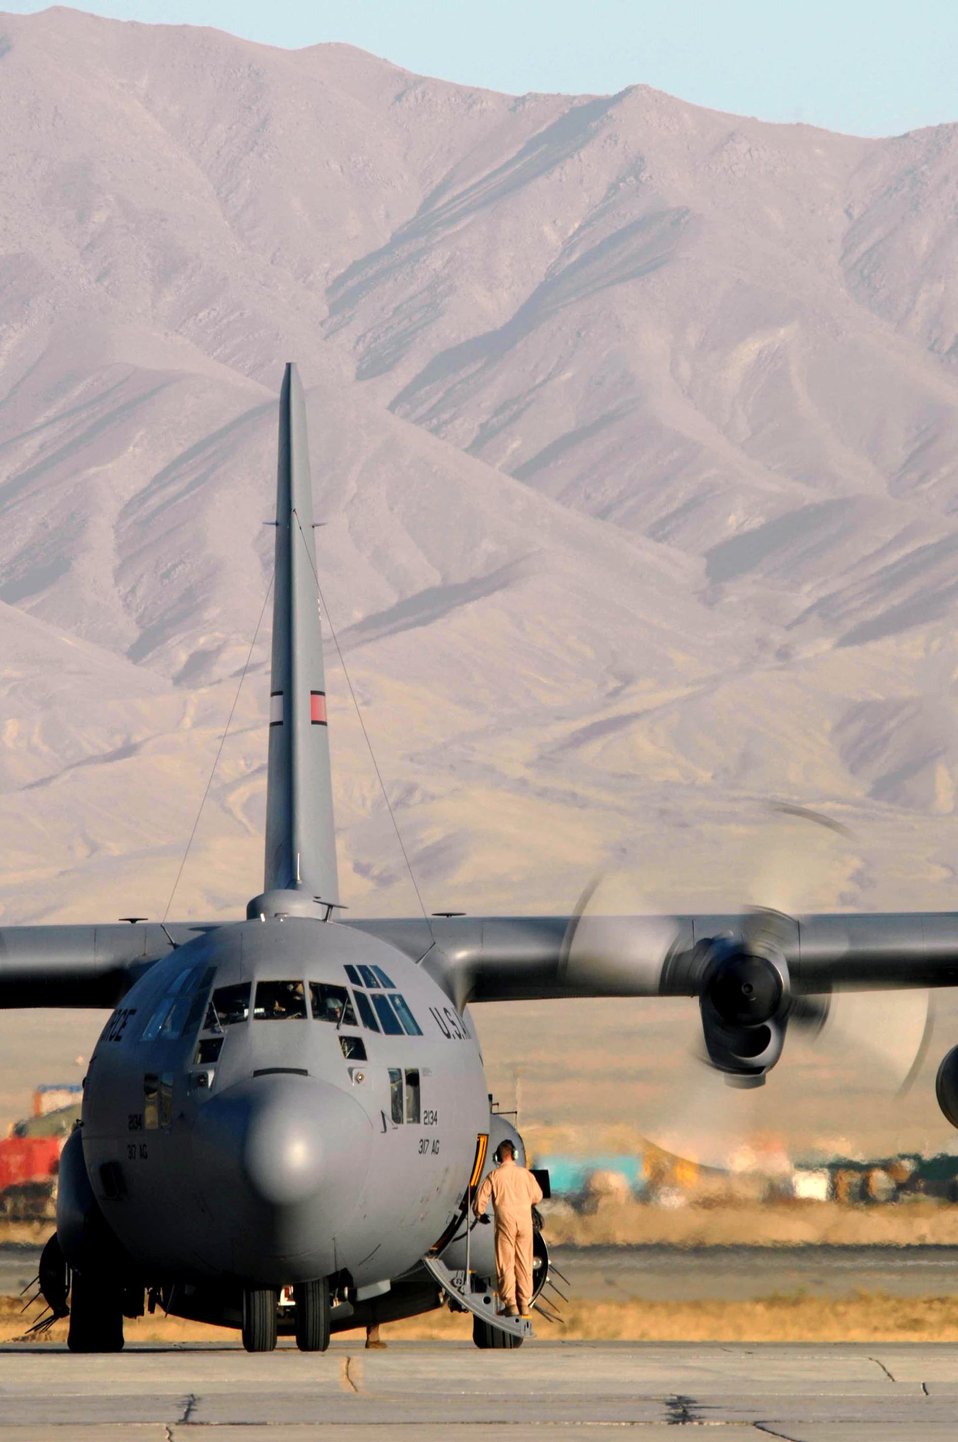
Joint forces in Bagram

A C-130 Hercules from the 317th Airlift Group from Dyess Air Force Base, Texas, prepares to take off for an airlift mission in support of Operation Enduring Freedom Sept. 24 at Bagram Air Base, Afghanistan. C-130s are an essential part of the 455th Air Expeditionary Wing airlift capabilities within the area of responsibilities. These capabilities bring mission critical supplies to the joint fight in support of the war on terrorism.